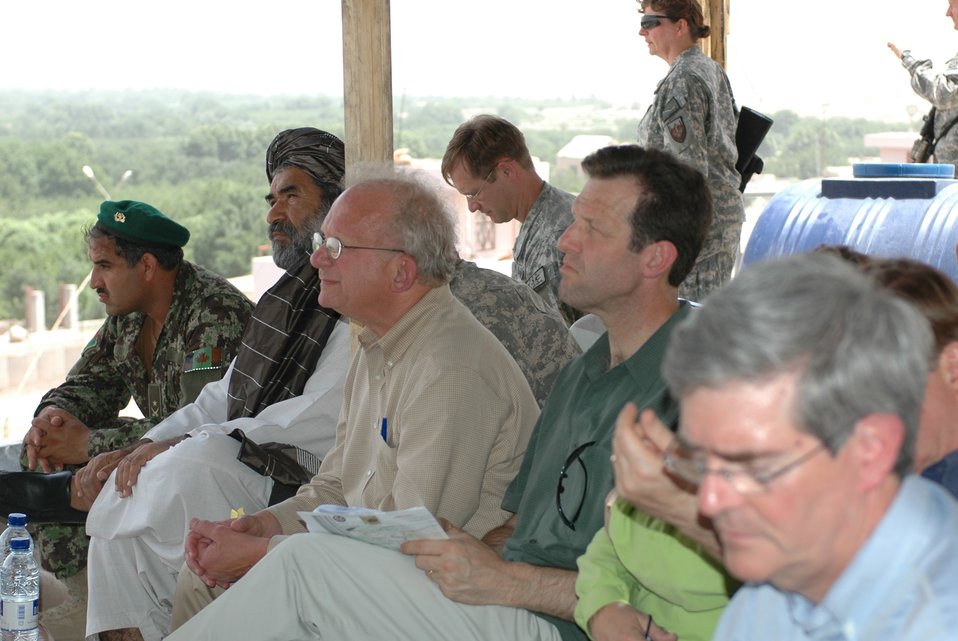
CODEL Berman